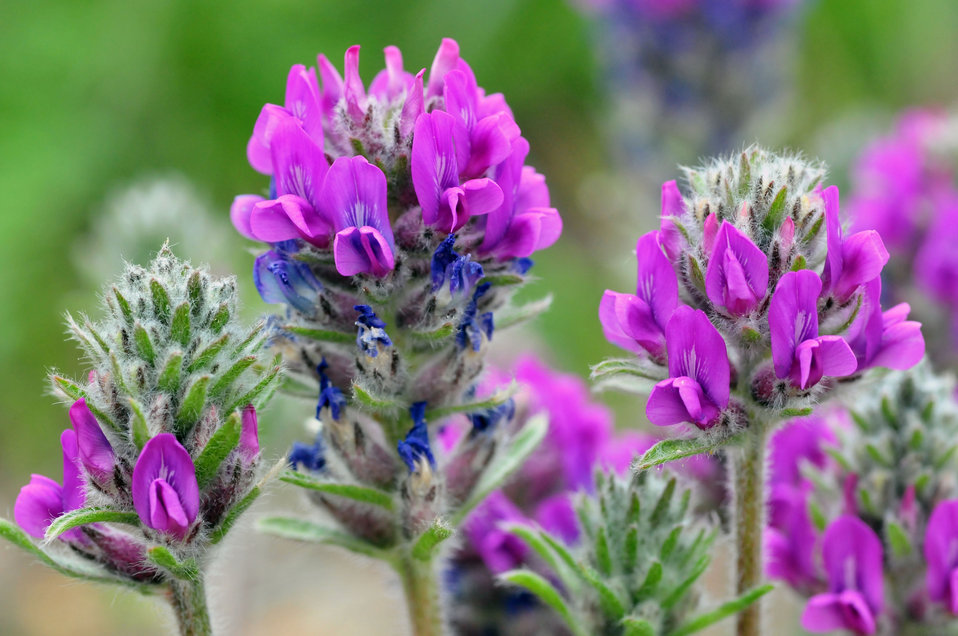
Fassett's locoweed flower.

Fassett's locoweed is a federally threatened plant that is a Wisconsin endemic. Photo by USFWS; Joel Trick